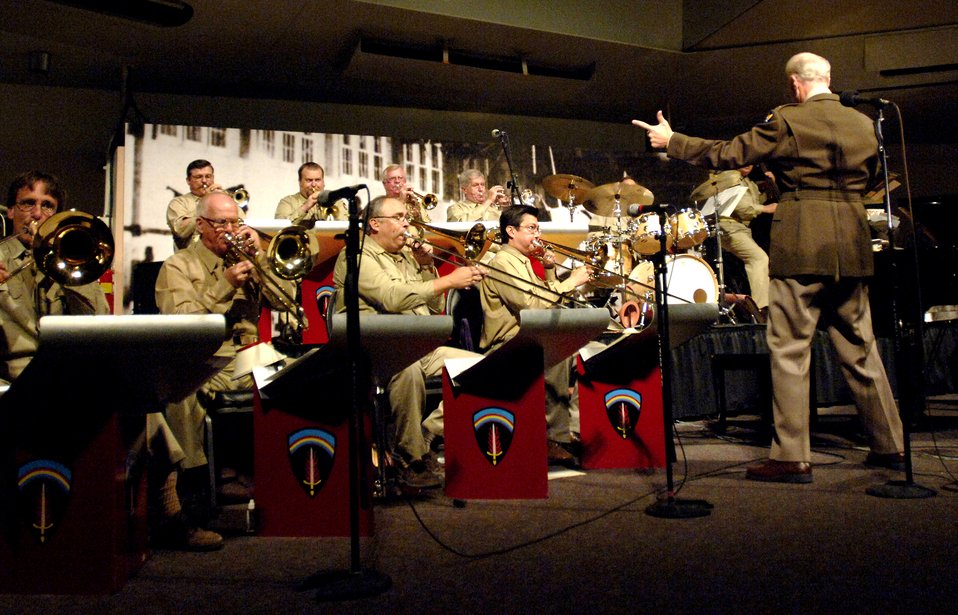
Memorial Day observances

The Sentimental Journey Orchestra, under the direction of Ted Conerly, plays big band swing music in a musical tribute to the nation's military members at the Institute of Texan Cultures in San Antonio on Sunday, May 28, 2006. More than 800 people attended the show.